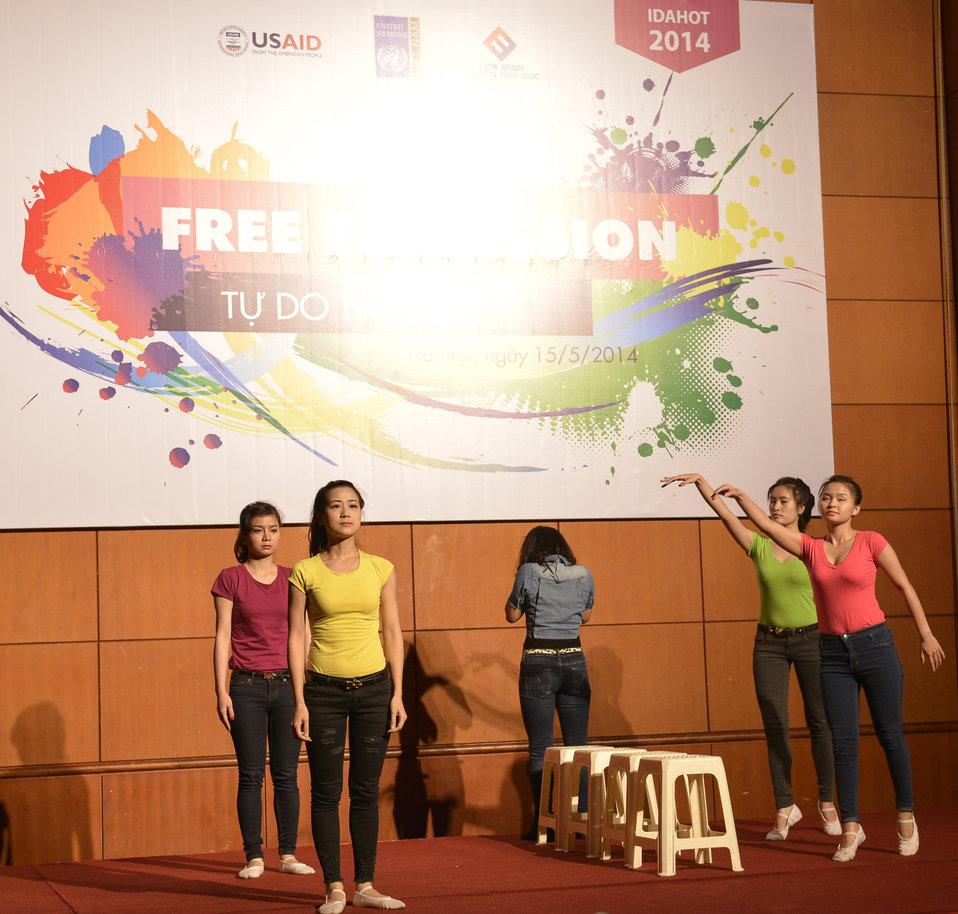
USAID supports celebration of IDAHOT Day 2014 in Hanoi

Hanoi, May 15, 2014.